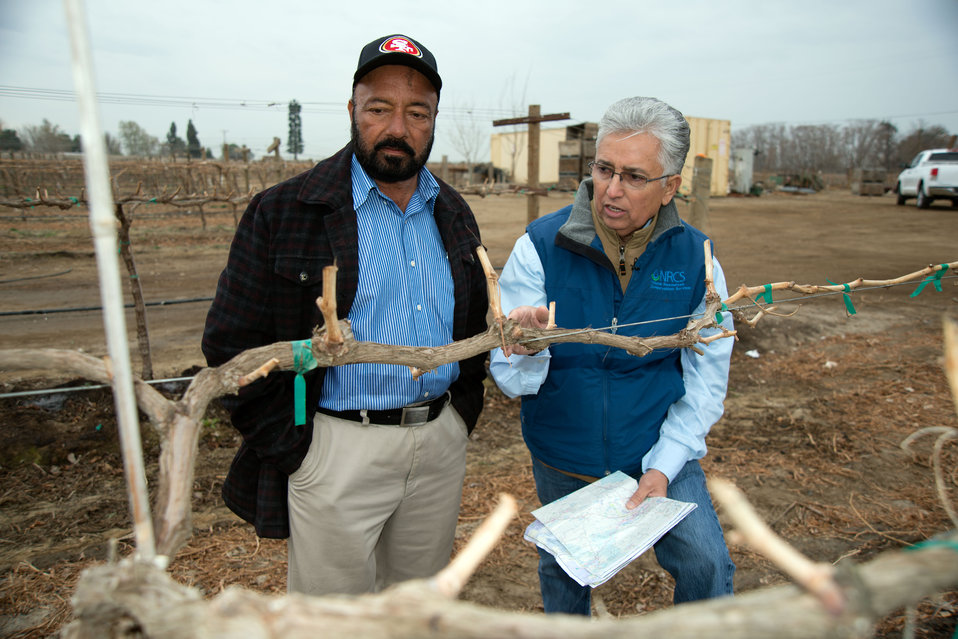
Retired U.S. Department of Agriculture (USDA) Natural Resource Conservation Service (NRCS) Raul Ramirez talks to Sikander Jassar about the damage the drought has caused to a vineyard in the Lamont farming community in southeastern Joaquin Valley in Kern County, CA on Feb. 26, 2014.